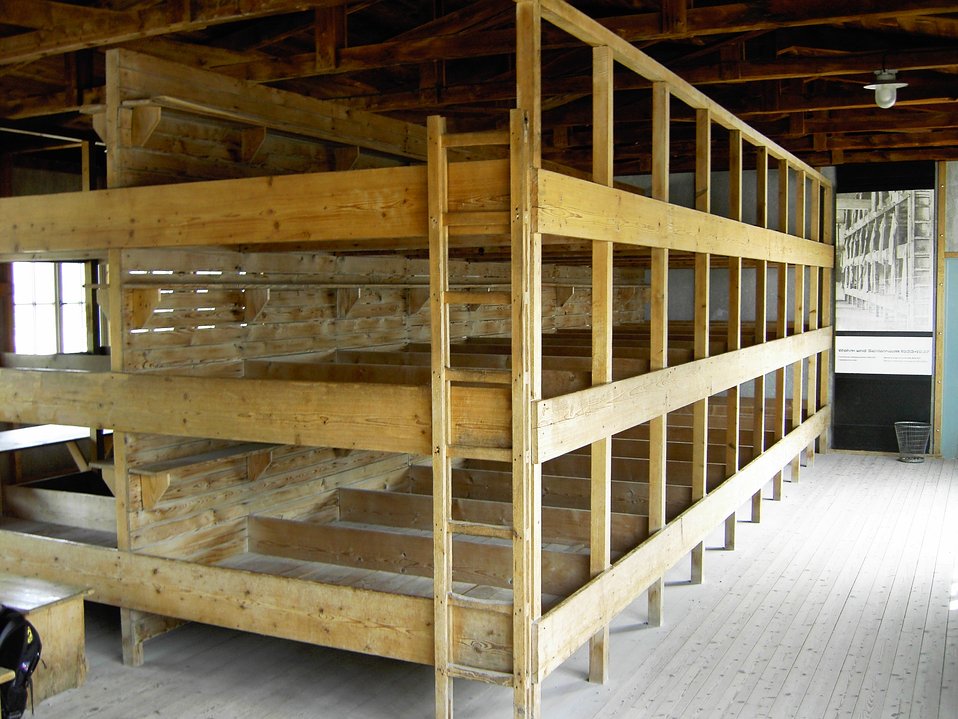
Dachau Barracks, where they slept